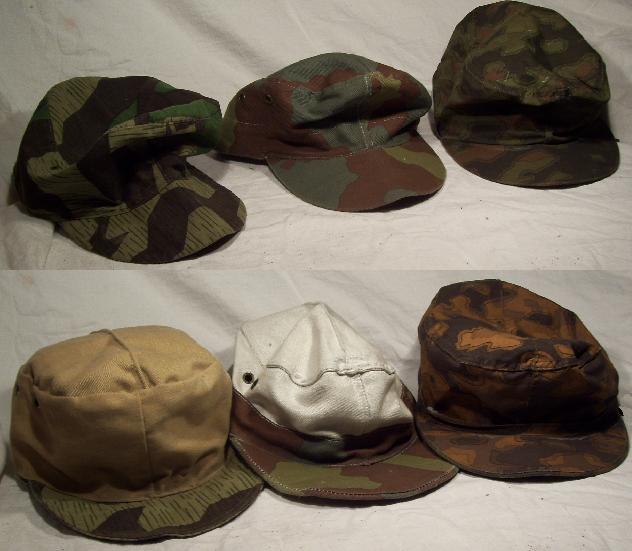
3 Camouflaged M43 (Try M41) field caps made in (Left to right) Splinter; Italian; and SS Blurred edge. The lower frame shows the same caps, in the same order, exposing the lining. Not that the SS model is the only fully reversible design.